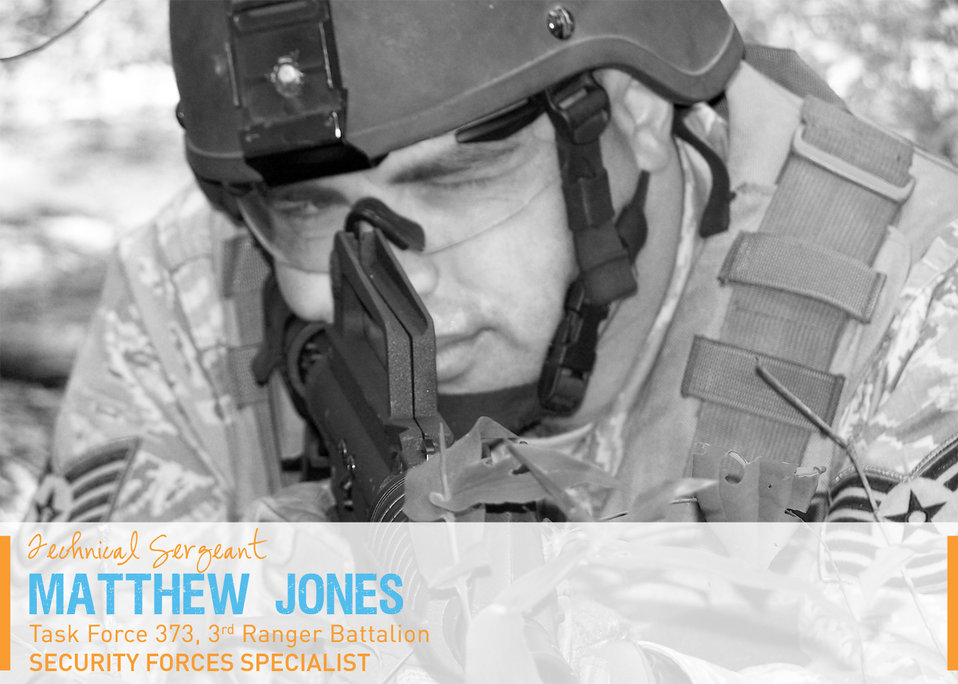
Portraits in Courage Vol 4: Tech. Sgt. Matthew Jones, security forces specialist, Task Force 373, 3rd Ranger Battalion. Despite his injuries received under fire, he obtained knowledge about an enemy training camp and relayed the information for a successful air attack to destroy it.